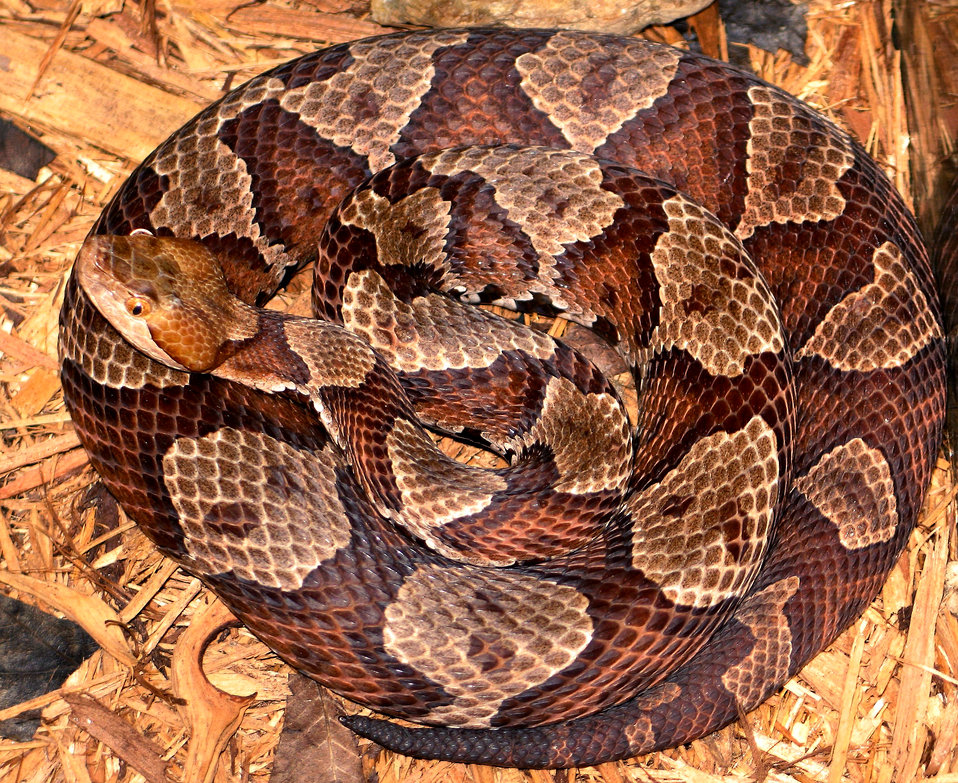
This 2005 image depicted a venomous 'Northern' copperhead snake, Agkistrodon contortrix mokasen. The northern copperhead ranges from southern Illinois, extreme northeastern Mississippi, Northern Alabama, and northern Georgia northeastward through the Appalachian Mountains to the level of southeastern New York and southern Massachusetts (Gloyd and Connant, 1990), placing it in hurricane-prone areas, which is of importance to those living in these regions, and first-responders offering aid to those affected by such a disaster. The preferred habitat of this race is characterized as open deciduous forests with rocky areas with an abundance of fallen leaves (Connat 1975).